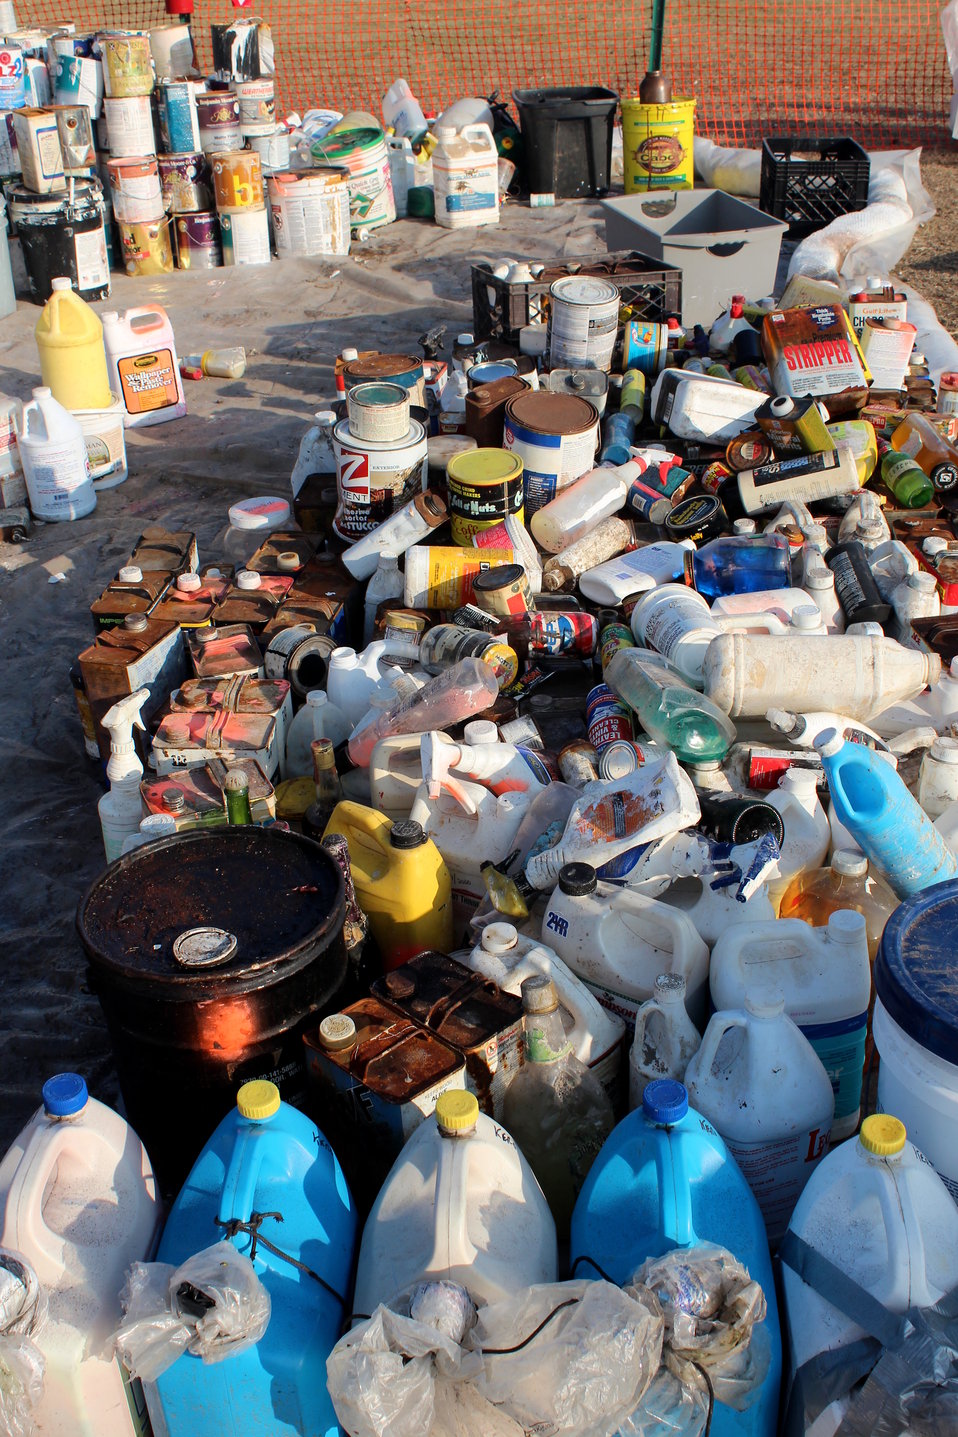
December 3, 2012 - Piles of familiar items

EPA has been collecting ‘Household Hazardous Waste’ to prevent more hazardous items from entering a standard landfill. Collected containers and liquids are categorized and separated for proper disposal.